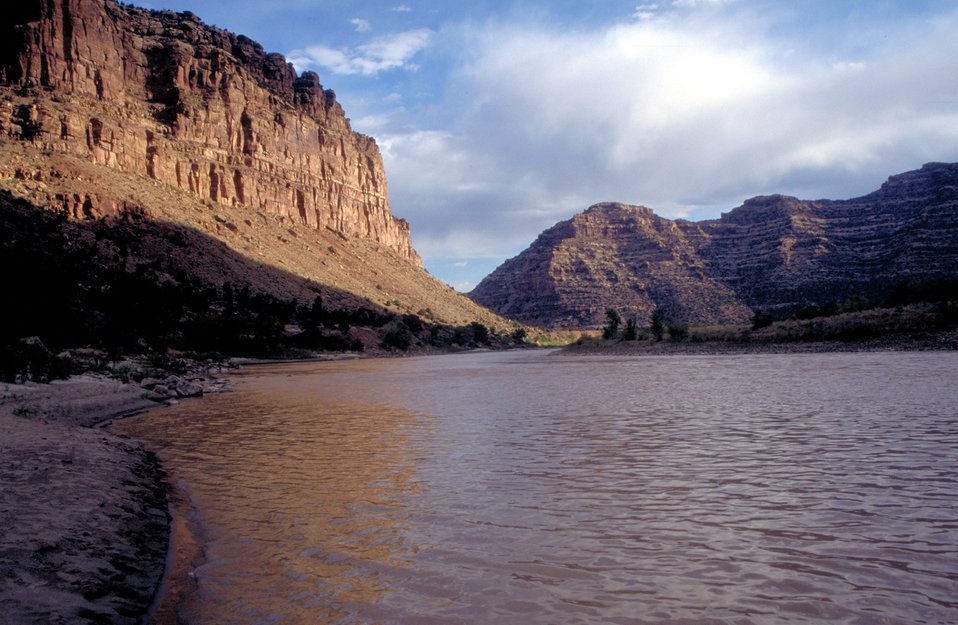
Desolation/Gray Canyons near Price, Utah.